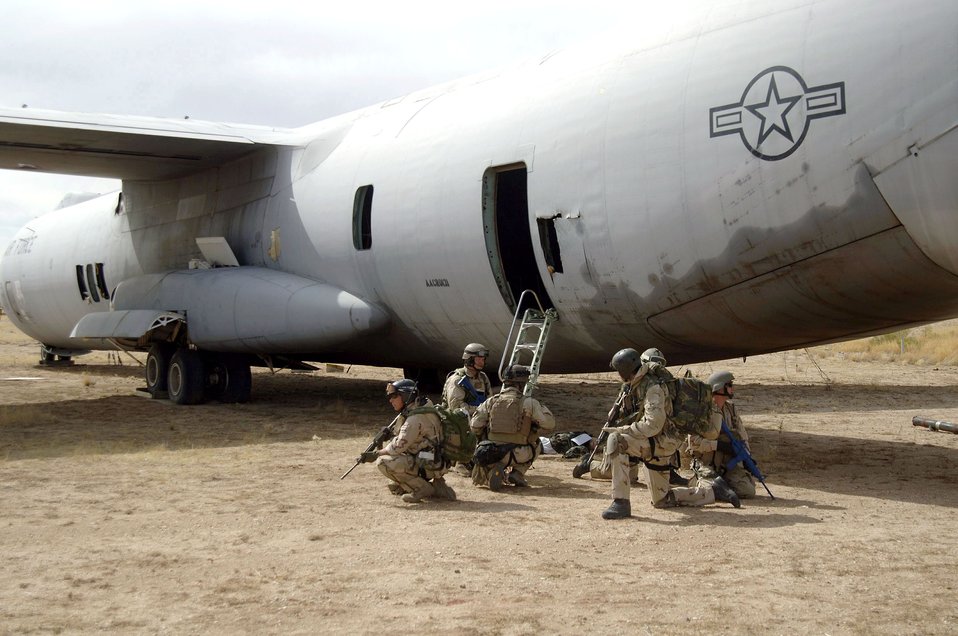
Joint exercise

DAVIS-MONTHAN AIR FORCE BASE, Ariz. (AFPN) -- Pararescuemen and members of the Dutch Army, rally near a C-141 Starlifter before searching for casualties during a joint mass casualty exercise Feb. 14. The scenario involved a simulated shoot-down of the cargo plane by a missile. The pararescuemen are with the 48th Rescue Squadron.